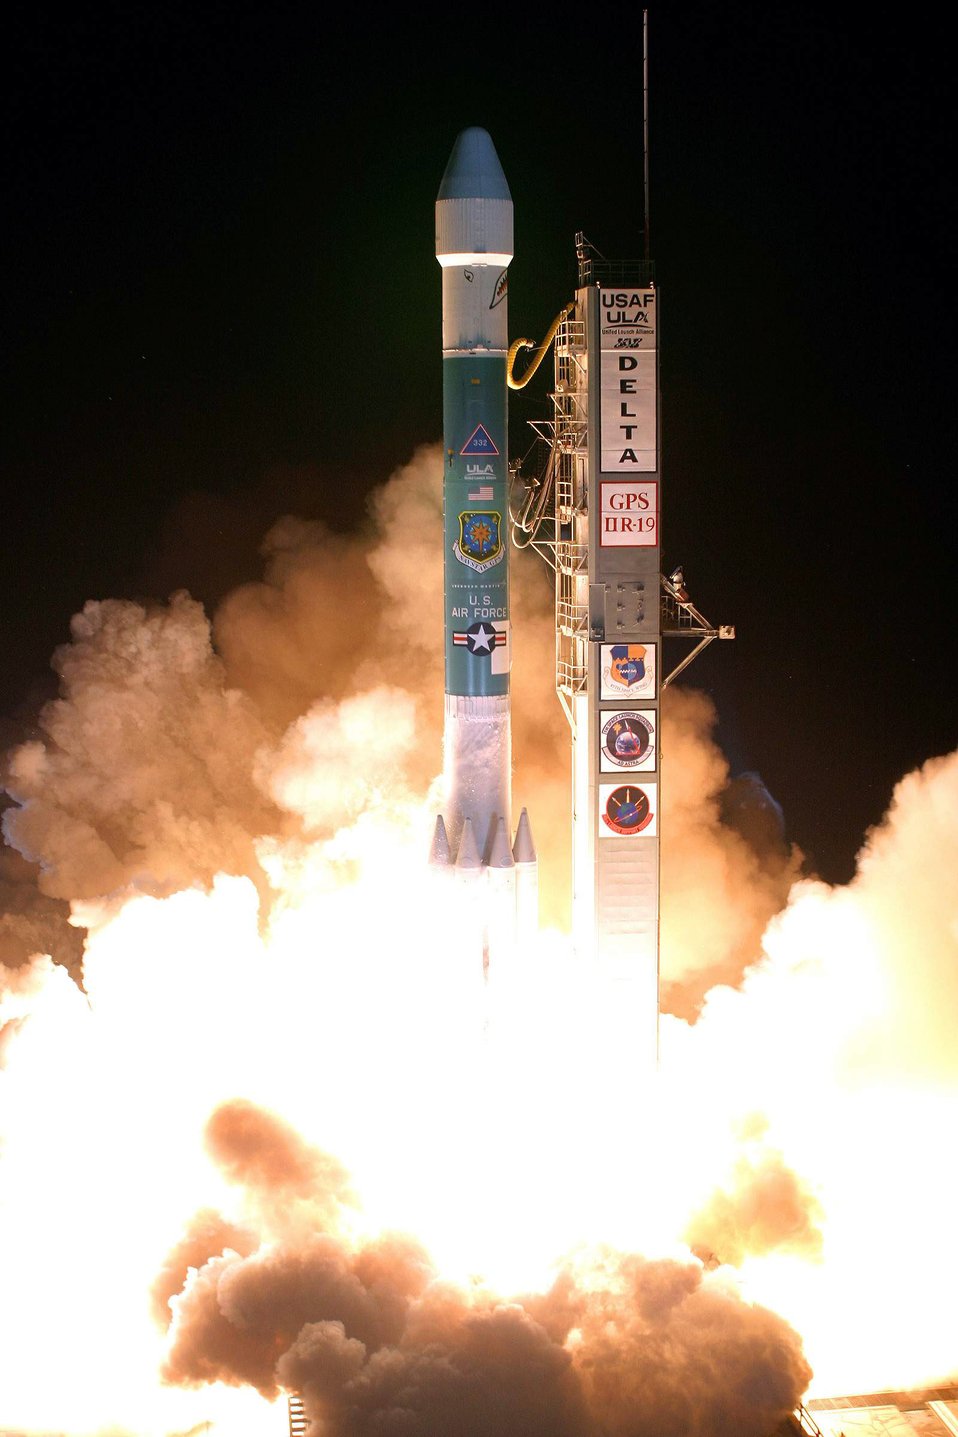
Cape Canaveral Airmen launch Delta II rocket

A Delta II rocket takes off carrying a Global Positioning System satellite for the Air Force March 15 from Space Launch Comples 17A at Cape Canaveral Air Force Station, Fla. The rocket was the first Delta II launched from the cape in 2008.